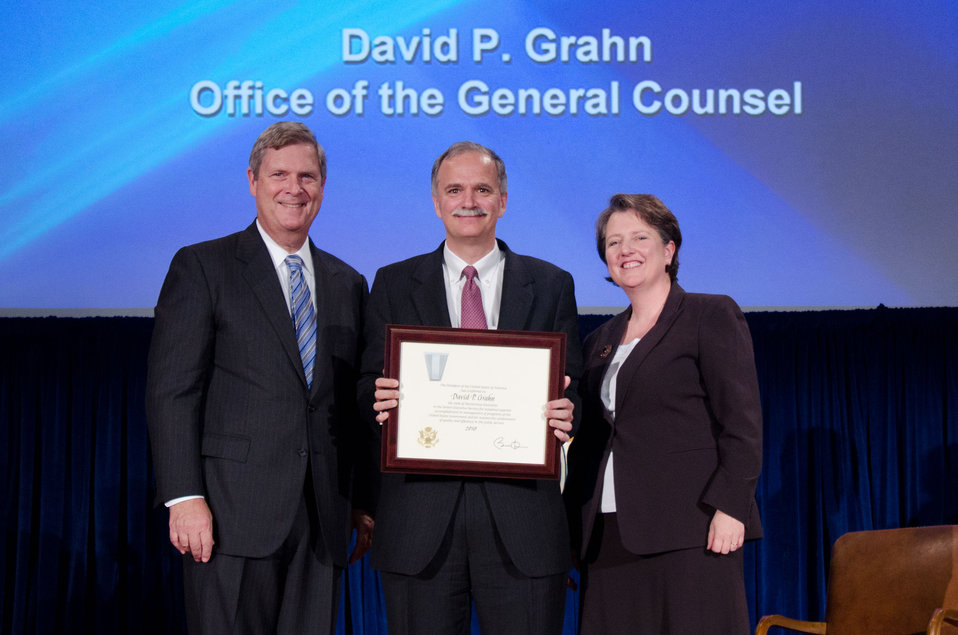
Agriculture Secretary Tom Vilsack (l) and Deputy Secretary Kathleen Merrigan (r), presents the Meritorious Executive Award to David P. Grahn, Associate General Counsel, Rural Development, Office of the General Counsel. The President of the United States of America has conferred on David P.Grahn the rank of Meritorious Executive in the Senior Executive Service for sustained extraordinary accomplishment in management of programs of the United States Government and for leadership exemplifying the highest standards of service to the public reflecting credit o the career civil service. On Wednesday, September 14, 2011 in the Jefferson Auditorium at the US Department of Agriculture in Washington, DC.